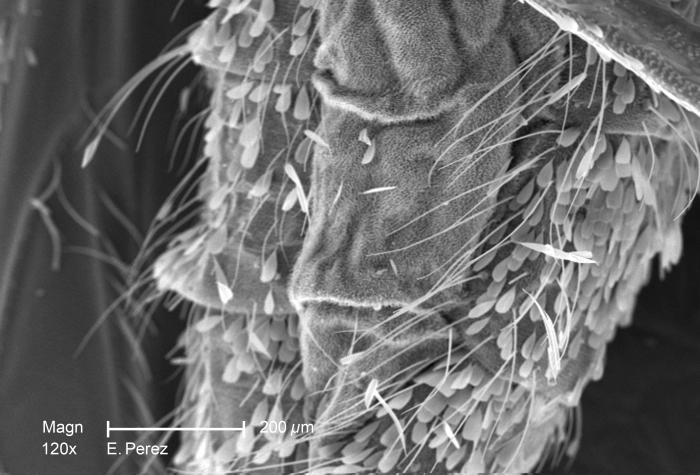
Under a relatively low magnification of 120X, focusing of the abdominal segment of an unidentified mosquito, this scanning electron micrograph (SEM) revealed some of the minute exoskeletal details adorning this organism foung in the Decatur, Georgia suburbs. As a member of the Phylum Arthropoda, i.e., Arthro = 'jointed', and poda 'leg', this insect is supported by a jointed exoskeleton, thereby, facilitating mobility of all of its body parts. For an even closer view if the abdominal surface see PHIL 10510.